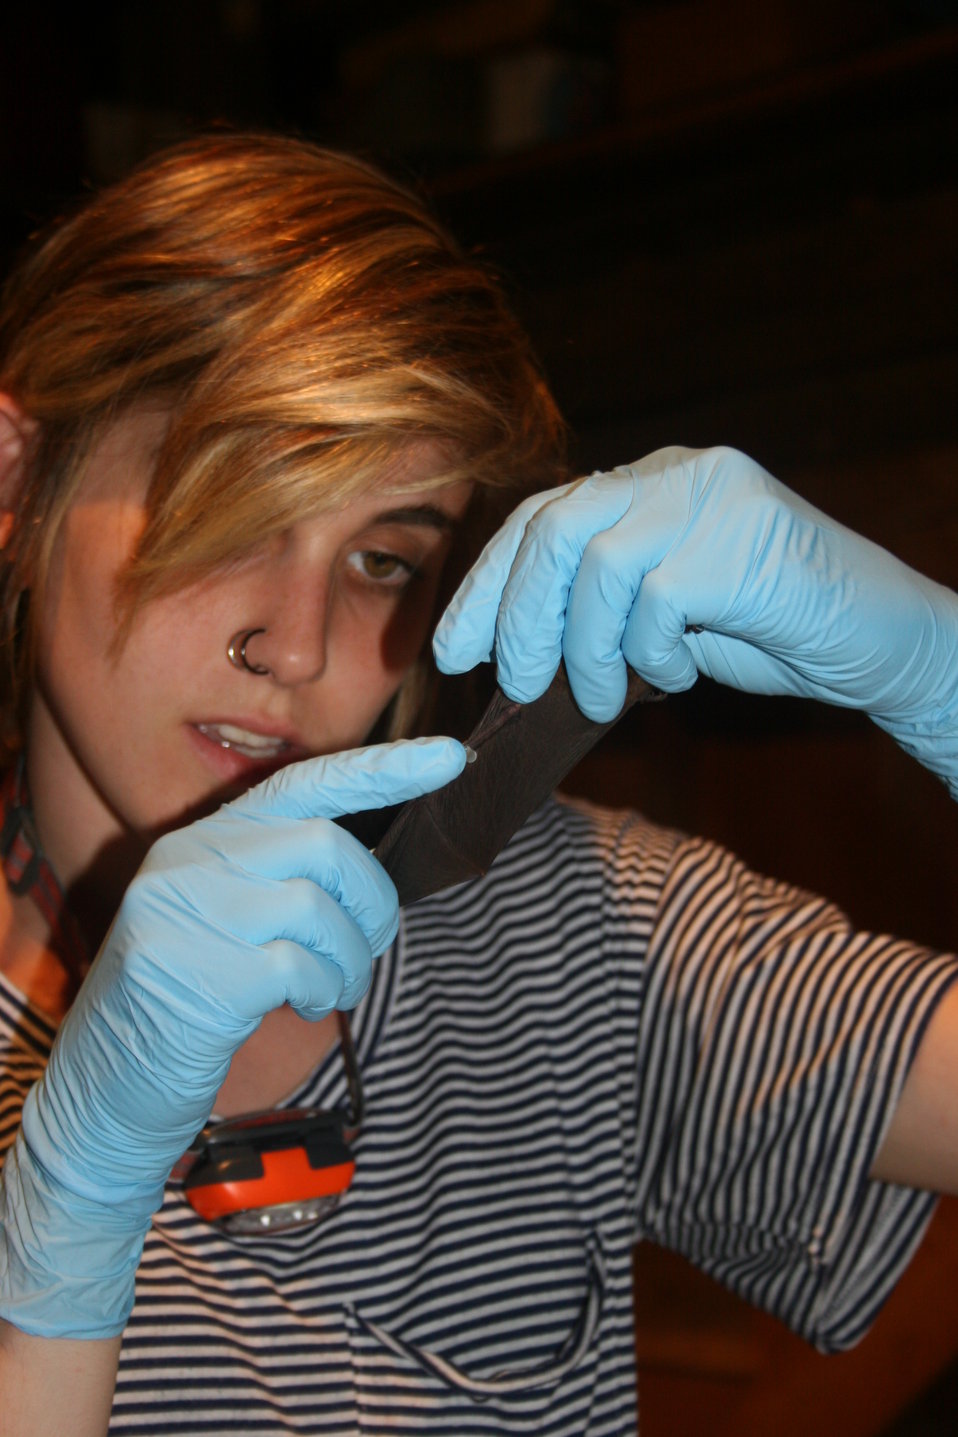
BU technician inspects wing

Boston University technician Ashley Banks inspects wing of little brown bat.